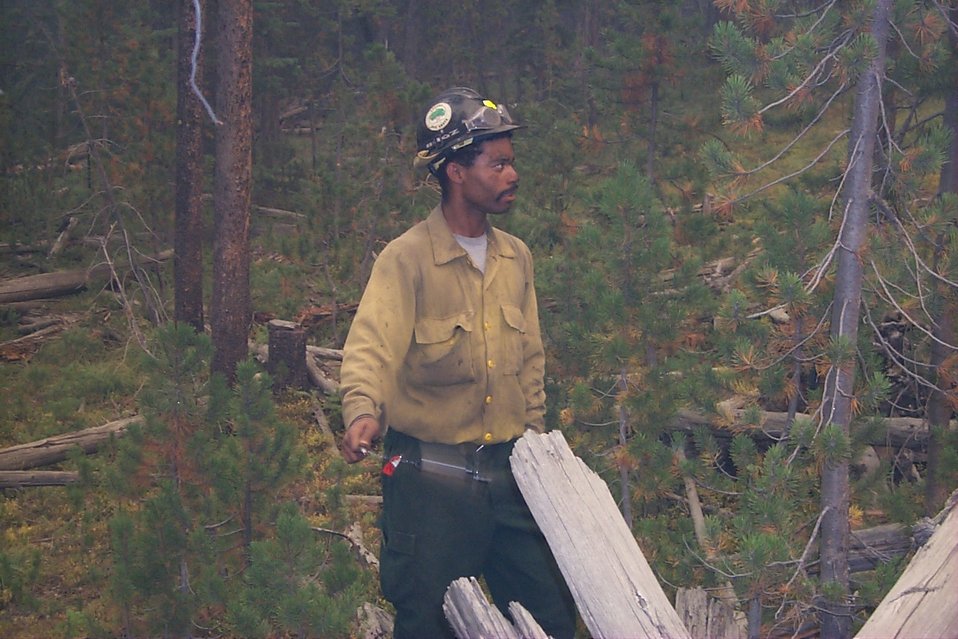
Fire fighter Fire Clearwater Fire Salmon Field Office USRD Upper Snake River District